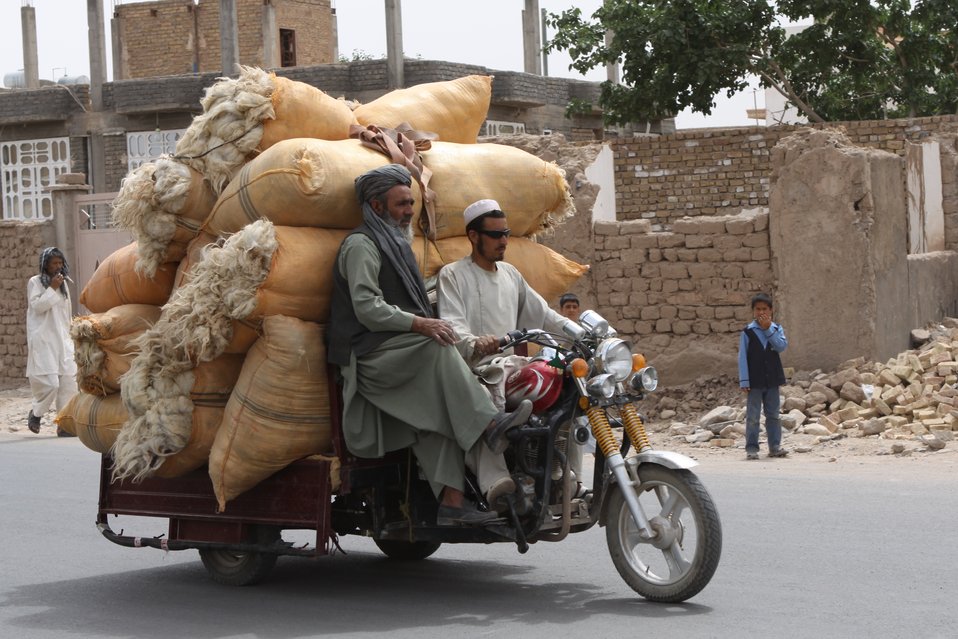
100525 Hirat Marble Conference 631